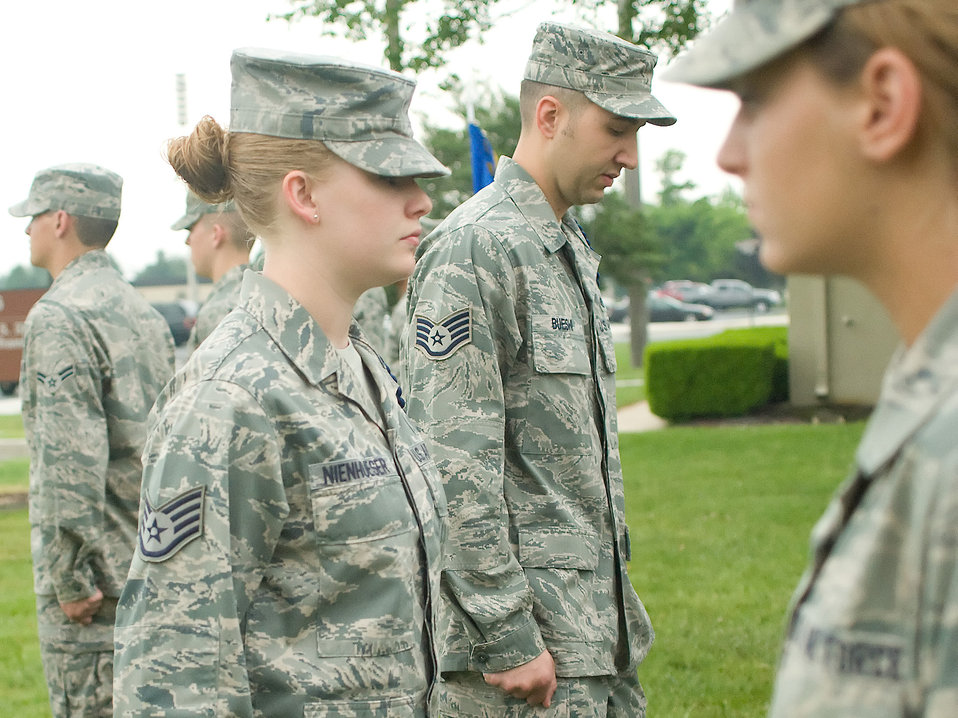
Military training leaders

Staff Sgt. Jessica Nienhueser (left) and Staff Sgt. Ali Bueshi, 373rd Training Squadron military training leaders, inspect Det. 3 Airmen's appearances May 24, 2011, at Dover Air Force Base, Del. The MTLs assure that Airmen in technical training retain the standards and discipline taught to them during basic military training.